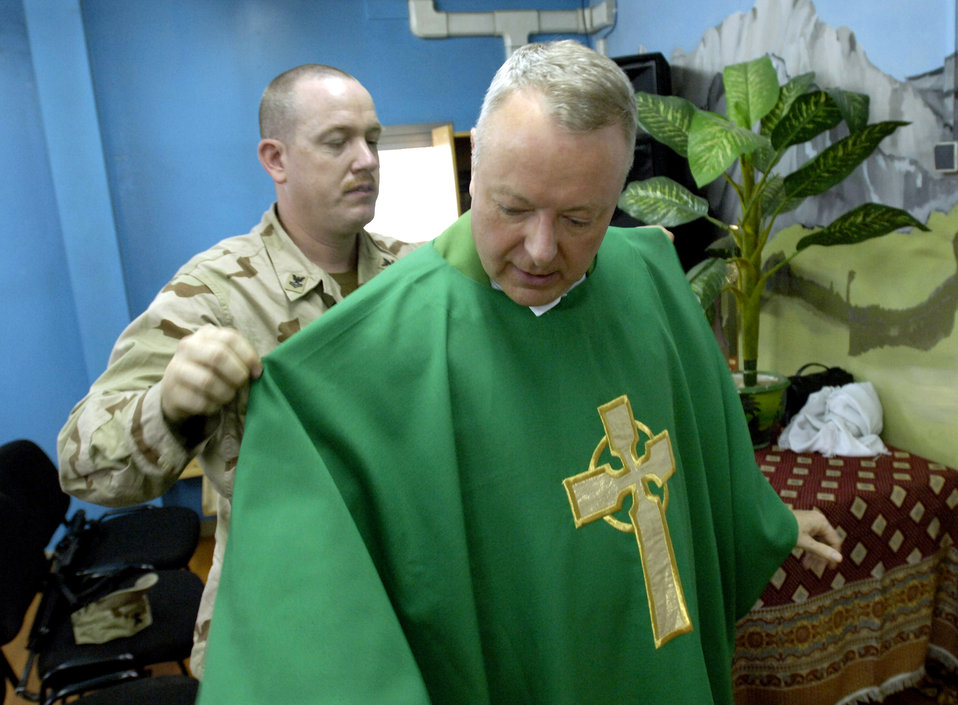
Air Force brings 17 Catholic priests into service in fiscal 2007

Navy Petty Officer 2nd Class Fred Hays assists Chaplain (Lt. Col.) Michael Weber into his vestments before the Catholic daily mass July 23 at Camp Eggers in Kabul, Afghanistan. Air Force chaplain recruiters brought in 11 active-duty and six Reserve Catholic priests in fiscal 2007.